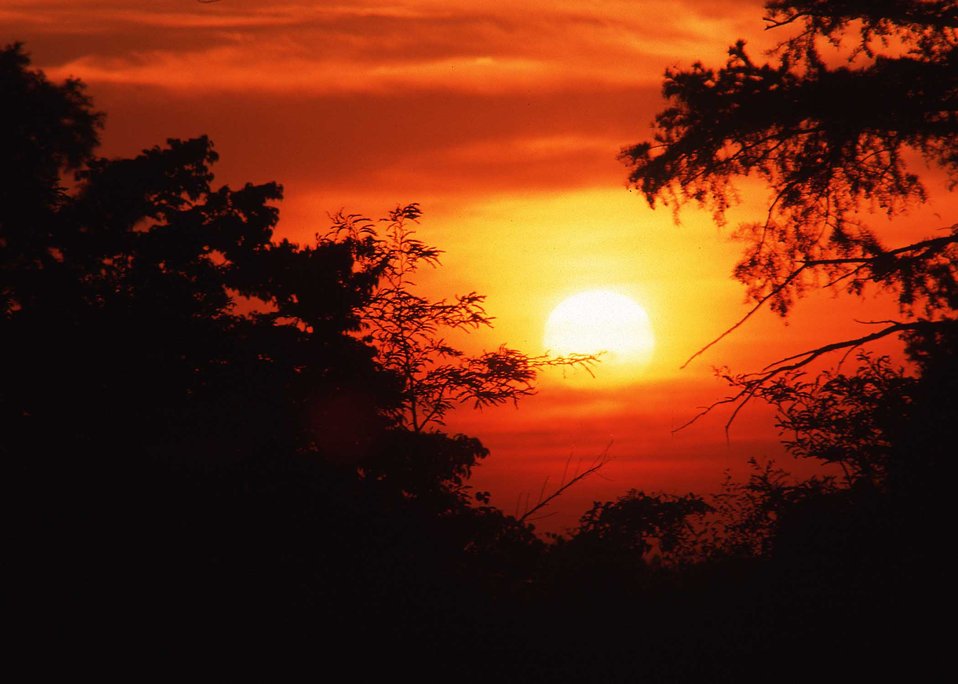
Sunrise in Arkansas.